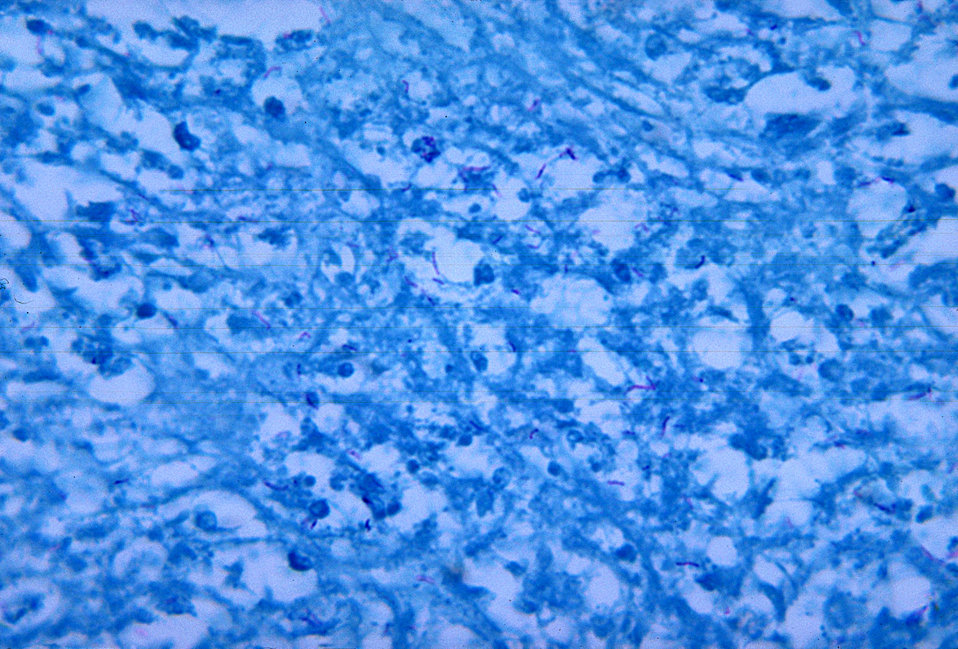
This photomicrograph depicts the histopathologic changes due to nocardiosis of a mesenteric lymph node using a FFN stain.